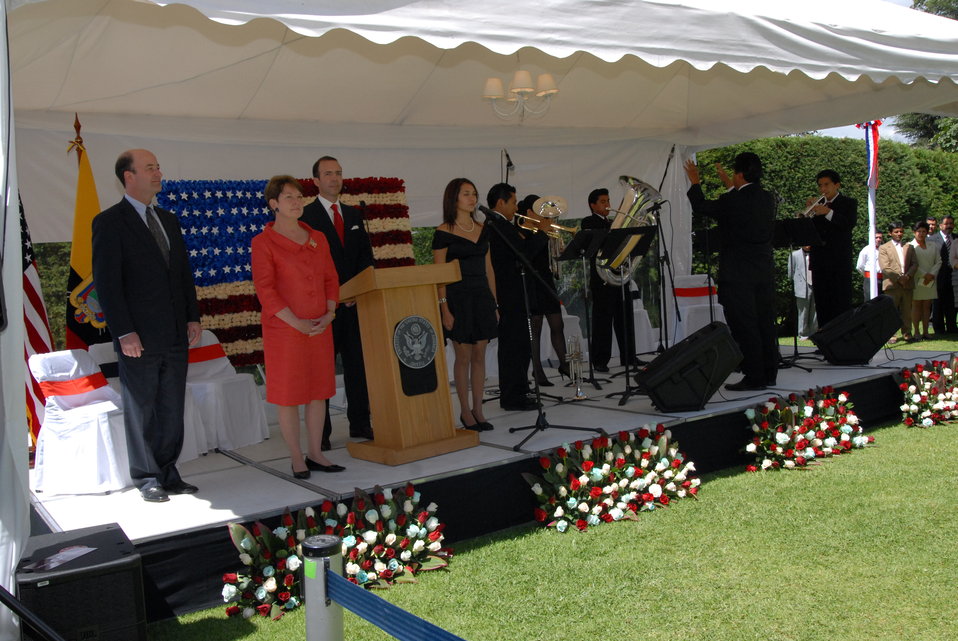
July 4th Celebration at U.S. Embassy in Ecuador

Maria Fernanda Naranjo of U.S. Embassy Quito’s Jazz Envoy 2009 sings the national anthem, accompanied by musicians from Ecuador’s Fundacion Brass Band, with U.S. Ambassador to Ecuador Heather Hodges and Daniel Sanchez-Bustamante standing, at the U.S. Embassy Quito in Ecaudor’s U.S. Independence Day celebration on July 2, 2010.